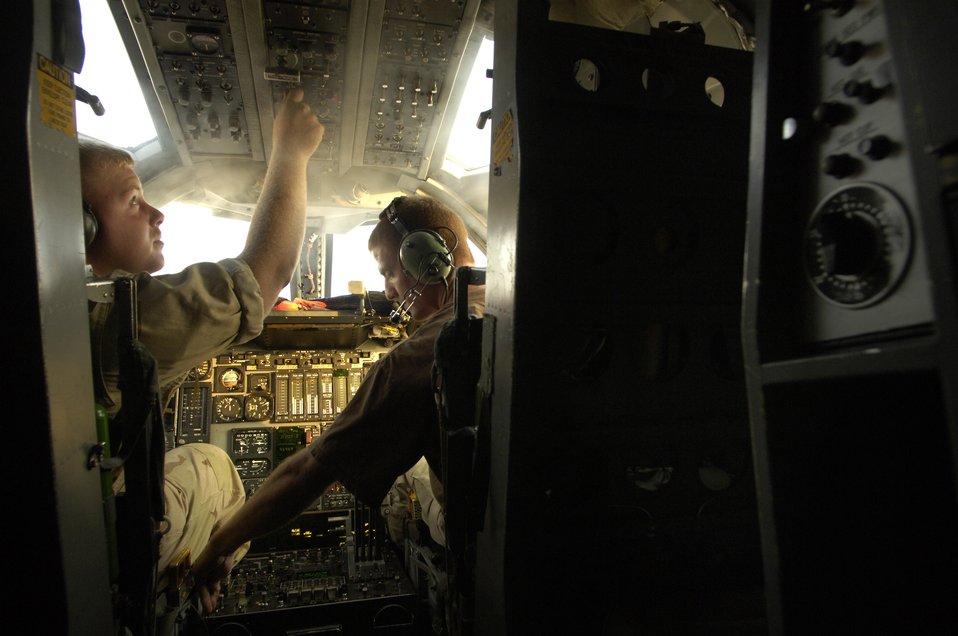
Keeping the bomber combat ready

Staff Sgt. Ryan Walker (left) and Tech. Sgt. Tim Davis, B-1B Lancer crew chiefs, run through a preflight inspection Sept. 28 in the forward crew cabin of a bomber deployed to a location in Southwest Asia. The Airmen, from Ellsworth Air Force Base, S.D. are assigned to the 379 Aircraft Maintenance Squadron.